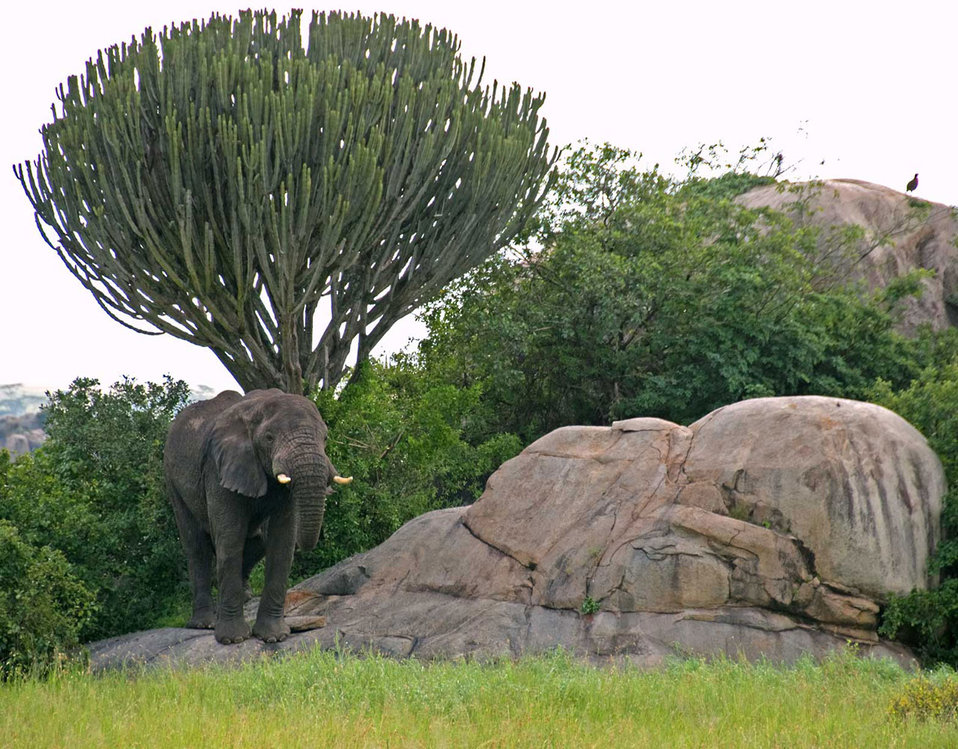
Serengeti kopje

The boulder is a kopje. the tree is a candelabra. along with the elephant this is a common sight in the serengeti in tanzania, africa..